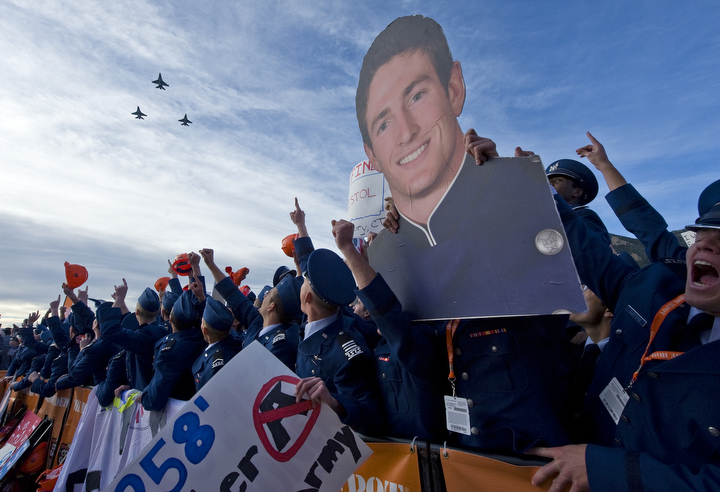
ESPN films 'College GameDay' from Academy

Cadets from the U.S. Air Force Academy cheer during a fly-by of F-16 Fighting Falcons during a broadcast of ESPN's